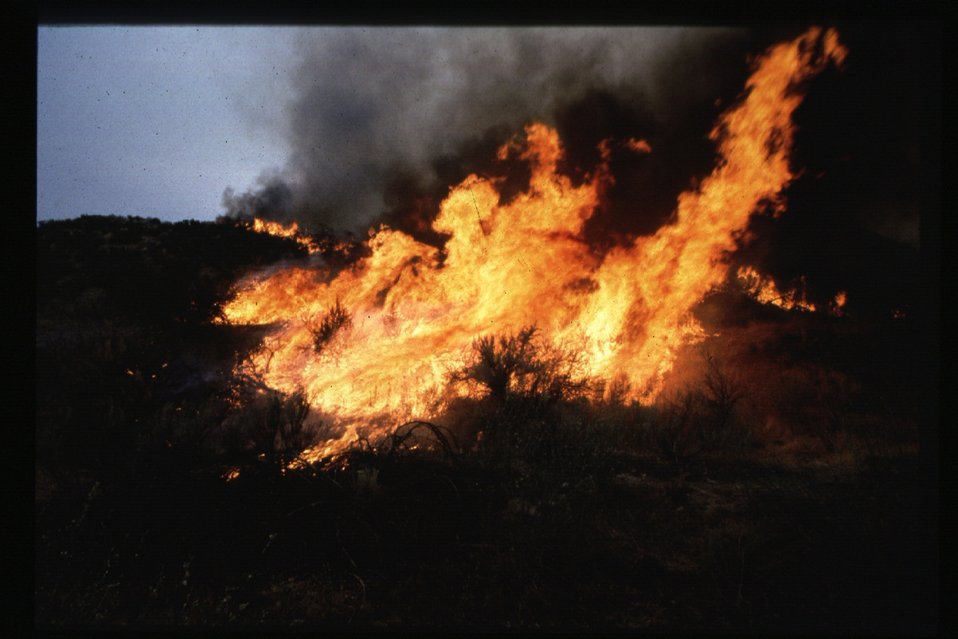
8th Street Fire Boise Front Foothills Four Rivers Field Office LSRD Lower Snake River District